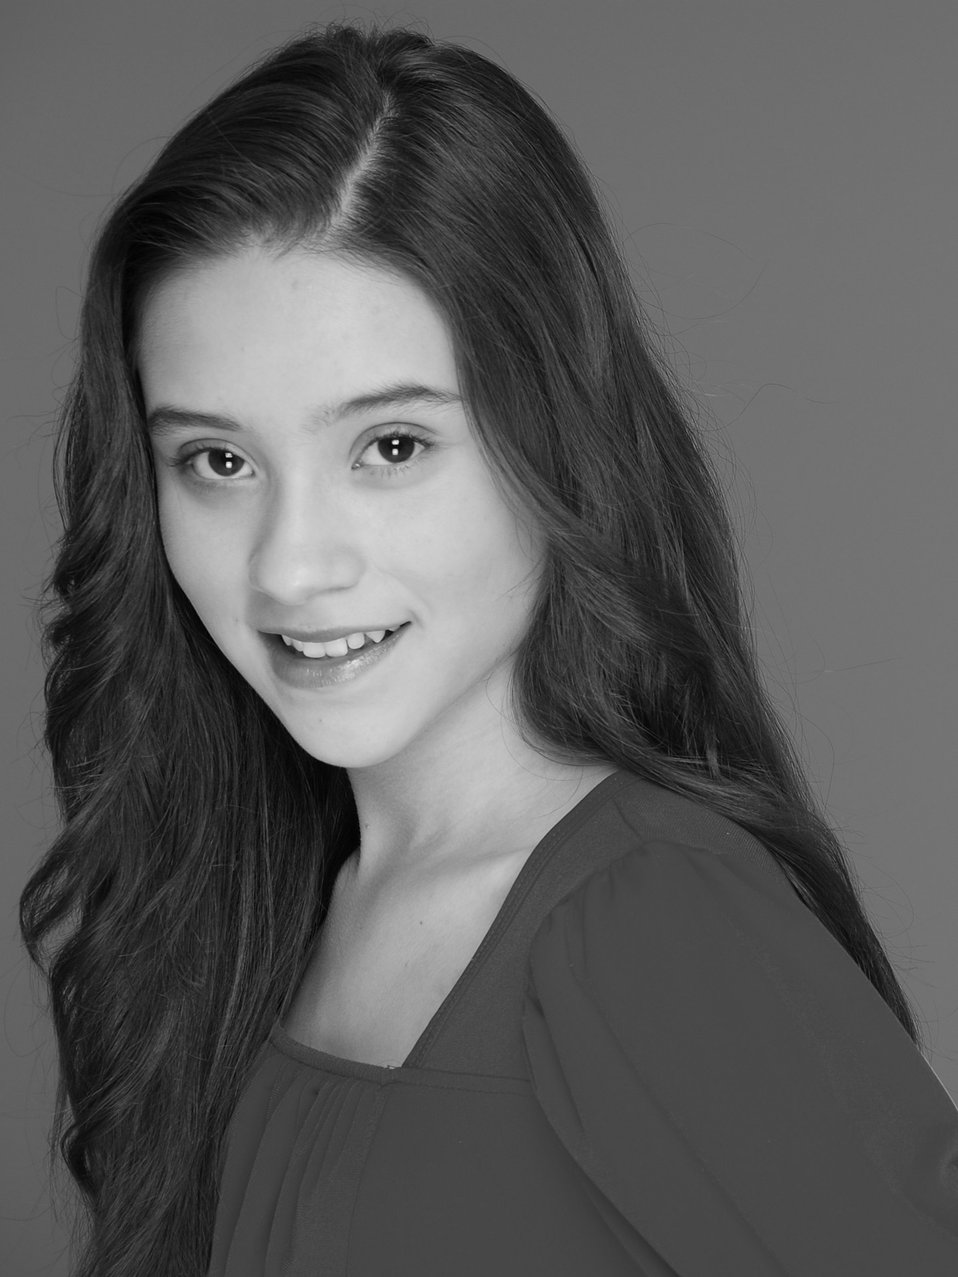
Mairani cuevas

Teen model.